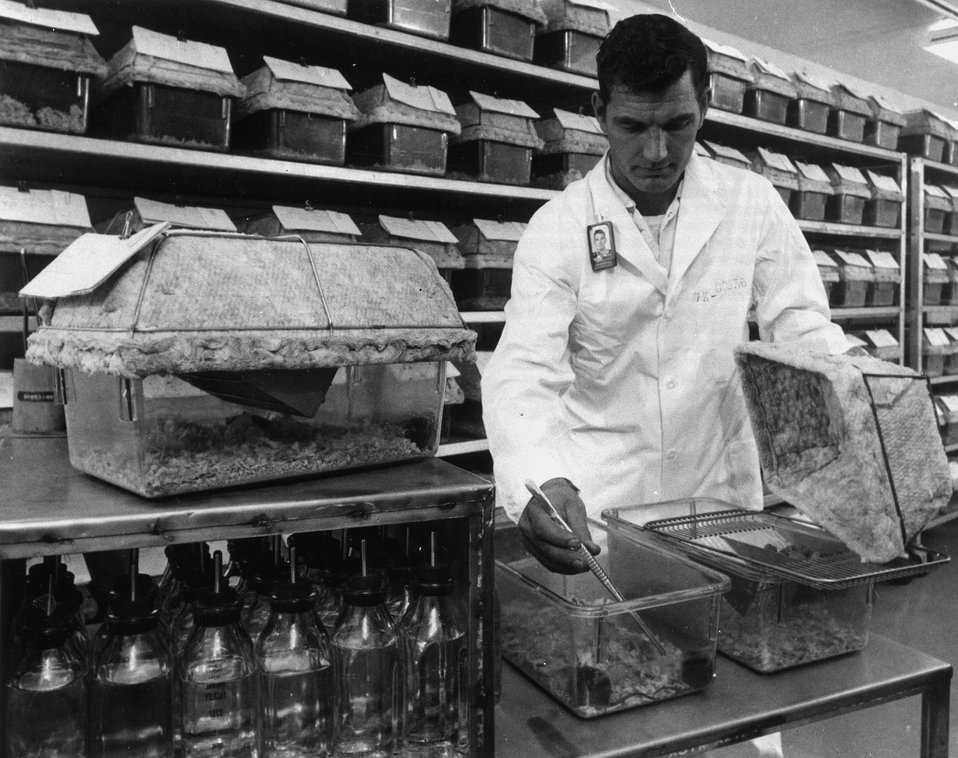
A new method of animal caging. c. 1967